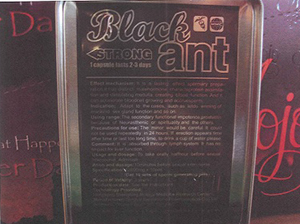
20140501163211496pic2 Page 4